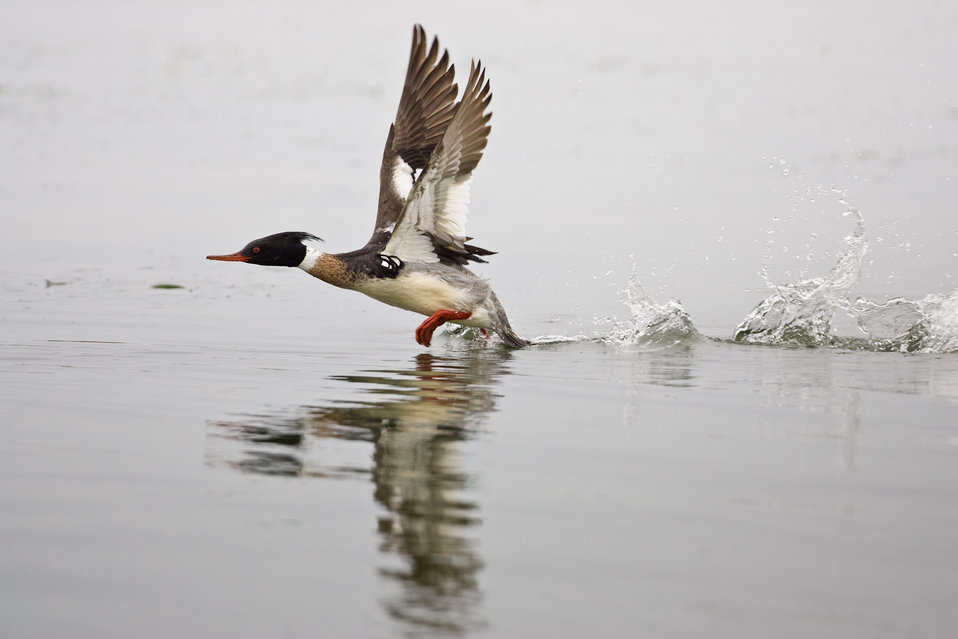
Red-breasted merganser (Adult male in breeding plumage)